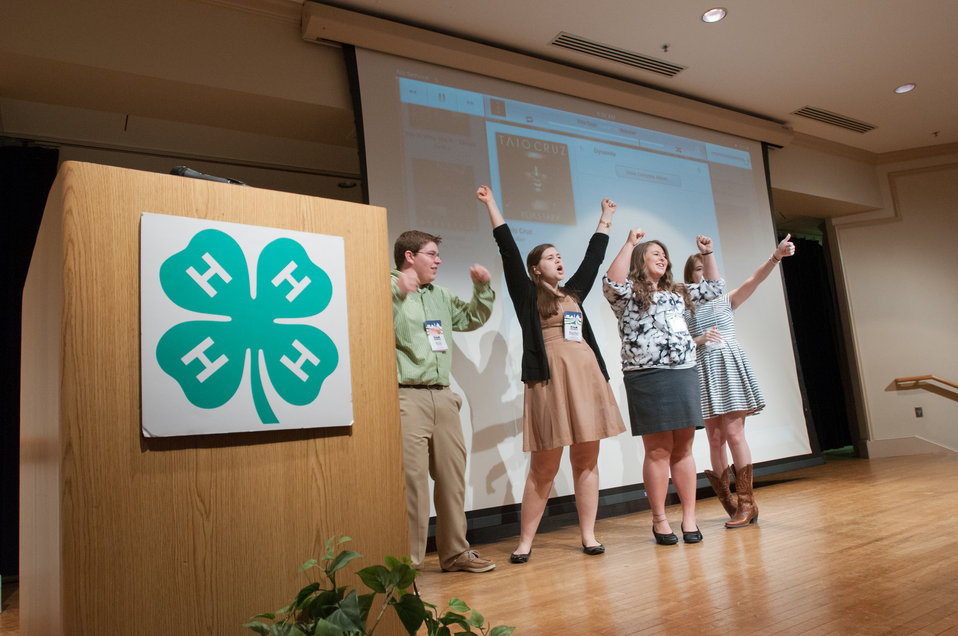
The 4-H Youth Leadership Team of (right-left) Laura Willis (NC), Amy Prestholt (IA), Rachel Fay (NY), and Ricki Schroeder (OK), finish leading the audience in a dance to pump up the energy before the start of the 2013 National 4-H Conference, on Monday, April 8, 2013 in Chevy Chase, MD. The youth delegates are in grades 10-12 (15-19 years old). The purpose of the conference is to 1) engage 4-H youth in personal development experiences that will increase knowledge, resources, and skills; 2) discuss topics affecting youth and 4-H programming nationwide; and 3) empower and mobilize 4-H youth to create positive social change in their communities in a meaningful and genuine way. The conference also reinforces the rich history of 4-H and its valuable tie to USDA, Cooperative Extension and the Land-Grant University System.